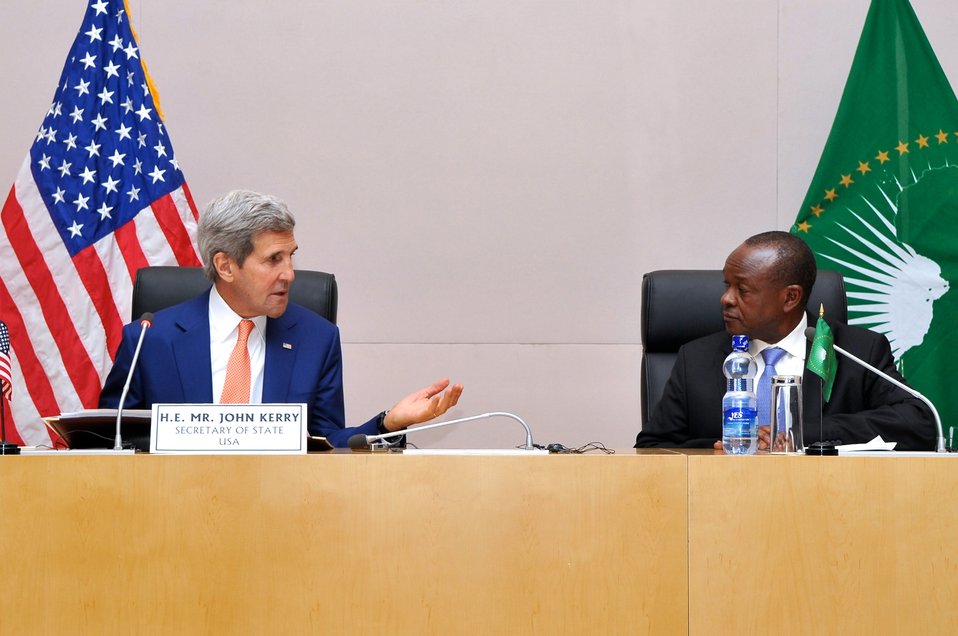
Secretary Kerry Meets With AU Deputy Chairperson, Commissioners in Ethiopia

U.S. Secretary of State John Kerry motions to African Union Deputy Chairperson Erastus Mwencha at the outset of a meeting with AU Commissioners at their headquarters in Addis Ababa, Ethiopia, on May 1, 2014.